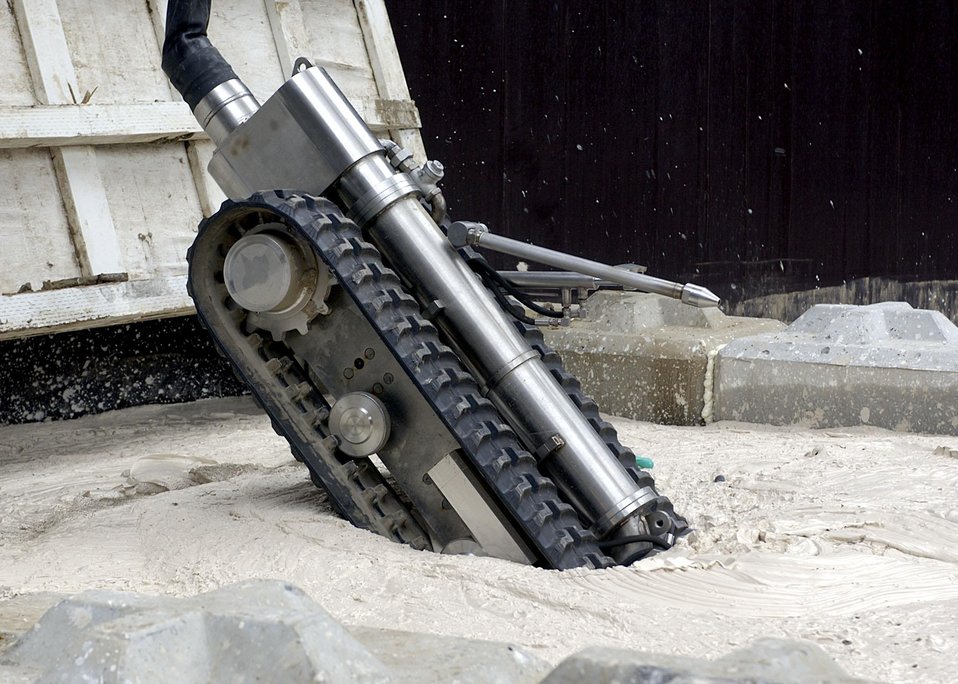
A REMOTE CONTROLLED MACHINE, A TANK CRAWLER, BEING TESTED AT HANFORD IN SIMULATED SLUDGE.

DOE'S OFFICE OF RIVER PROTECTION IS TESTING THE 1300 LB. TANK CRAWLER, FOR USE IN ACCELERATING THE CLEANUP AND CLOSURE OF MANY OF THE HANFORD SITE'S LARGE RADIOACTIVE WASTE TANKS. SIMULATED SLUDGE IS USED TO TEST THE CRAWLER IS BEING TESTED IN A LARGE 800,000 GALLON SIMULATED WASTE TANK.